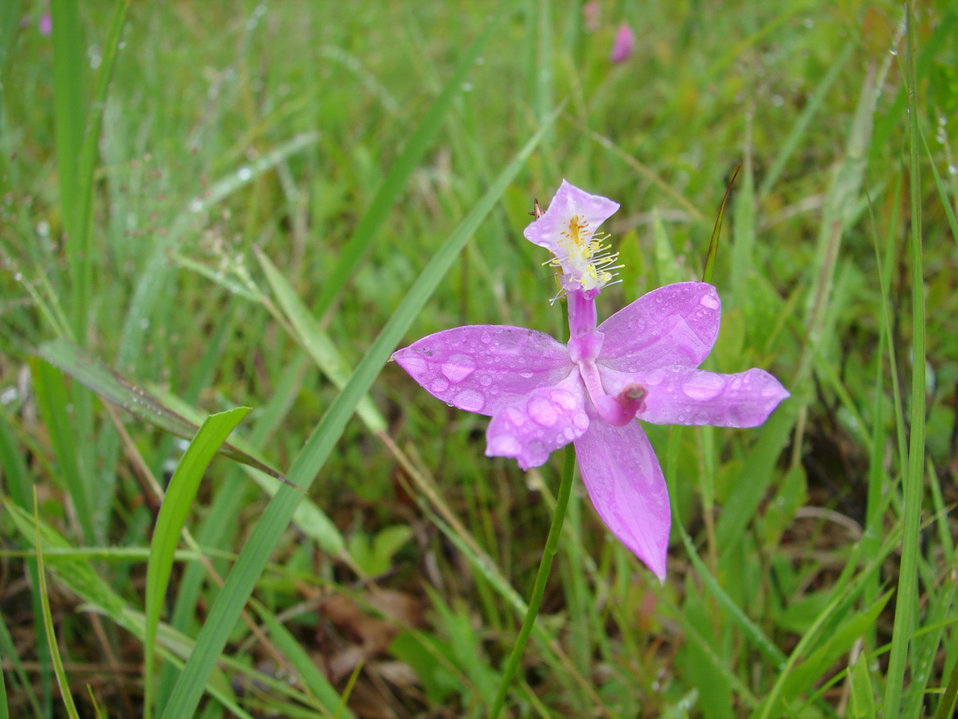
grass pink

Necedah National Wildlife Refuge, WI